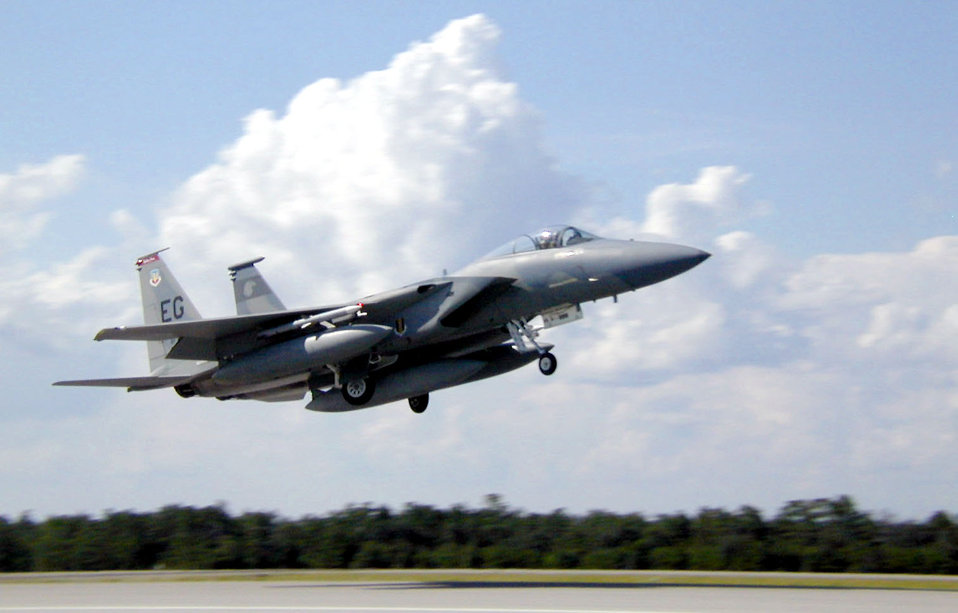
An Eagle takes flight

EGLIN AIR FORCE BASE, Fla. -- An F-15 Eagle from the 60th Fighter Squadron takes off from here. Airmen and aircraft from the 33rd Fighter Wing participated in a joint combat-identification exercise in Gulfport, Miss.